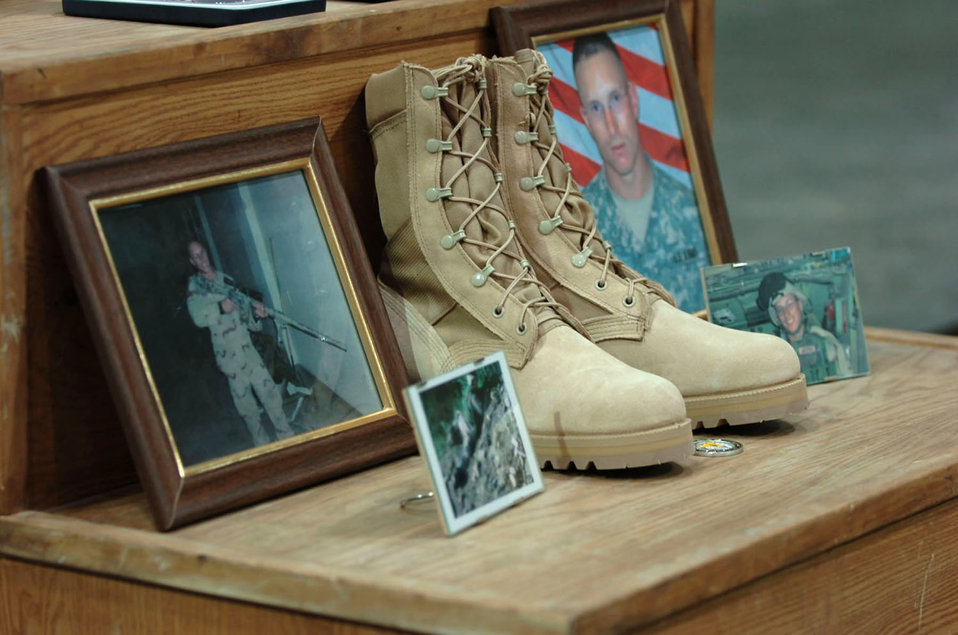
Living your life the way you want can impact others

The boots and photos of Army Staff Sgt. Daniel Morris serve as a reminder of his dedication to duty and of his sacrifice while doing what he believed in.